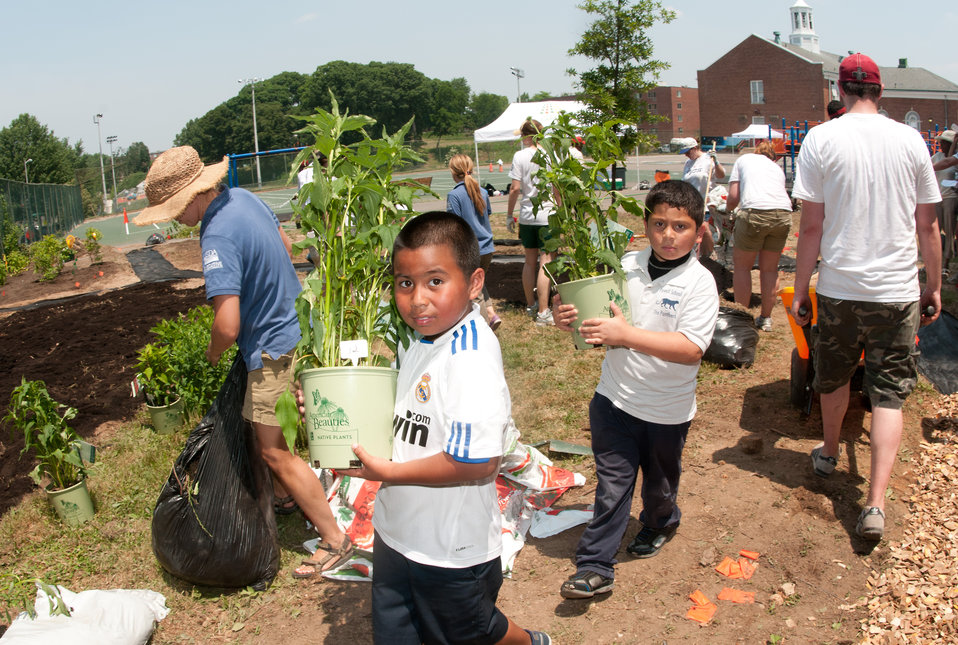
Students at William B. Powell Elementary School were allowed to help in the making of the People’s Garden, by relocating a variety of plants such as these Echinacea purpurea 'Ruby Star' plants, on Thursday, June 9, 2011 in Washington, DC. Volunteers from U.S. Department of Agriculture People’s Garden Executive Master Gardener program and Washington Capitals hockey organization, along with defenseman Jeff Schultz, and mascot Slapshot transformed a grassy corner of the Powell Elementary School playground into a habitat garden and outdoor learning area. Executive Master Gardeners led the volunteer project teams. The Washington Capitals donated new tools; tool shed; garden materials; lunch; most of the volunteers and more. The completed projects included a walking path; tiling of garden plots; planting a bird habitat garden, pollinator garden and native grasses; caterpillar and butterfly plaques; hummingbird and bat house, and tool shed. The garden will later include a picnic area, outdoor classroom, hummingbird garden, Monarch watch garden, native bee garden, and birdbath. USDA challenges its employees to establish People's Gardens at USDA facilities worldwide or on this case, help communities create gardens. People's Gardens vary in size and type, but all have a common purpose - to help the community and the environment.